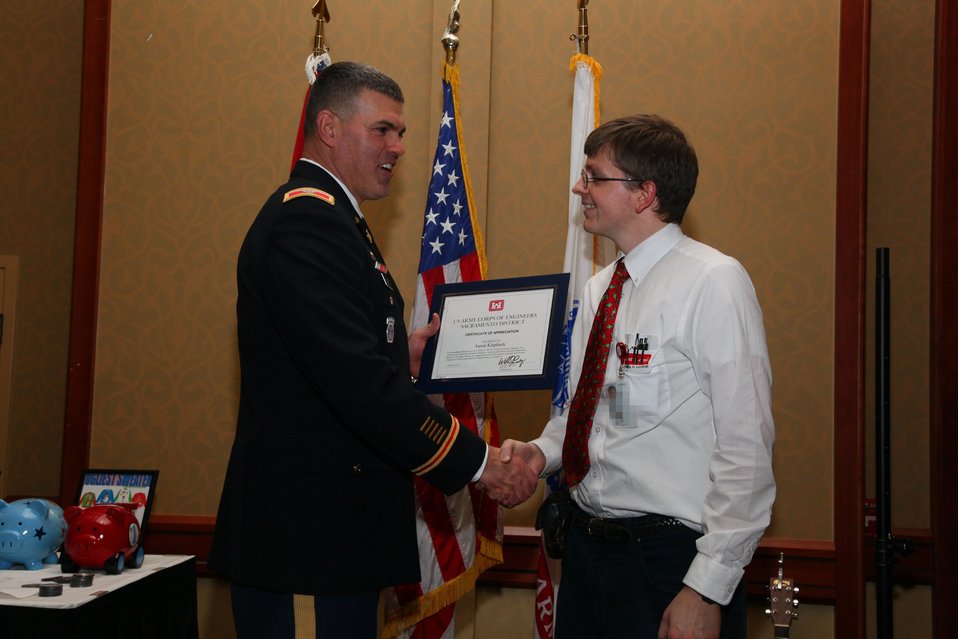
Sacramento District Holiday Party 2011